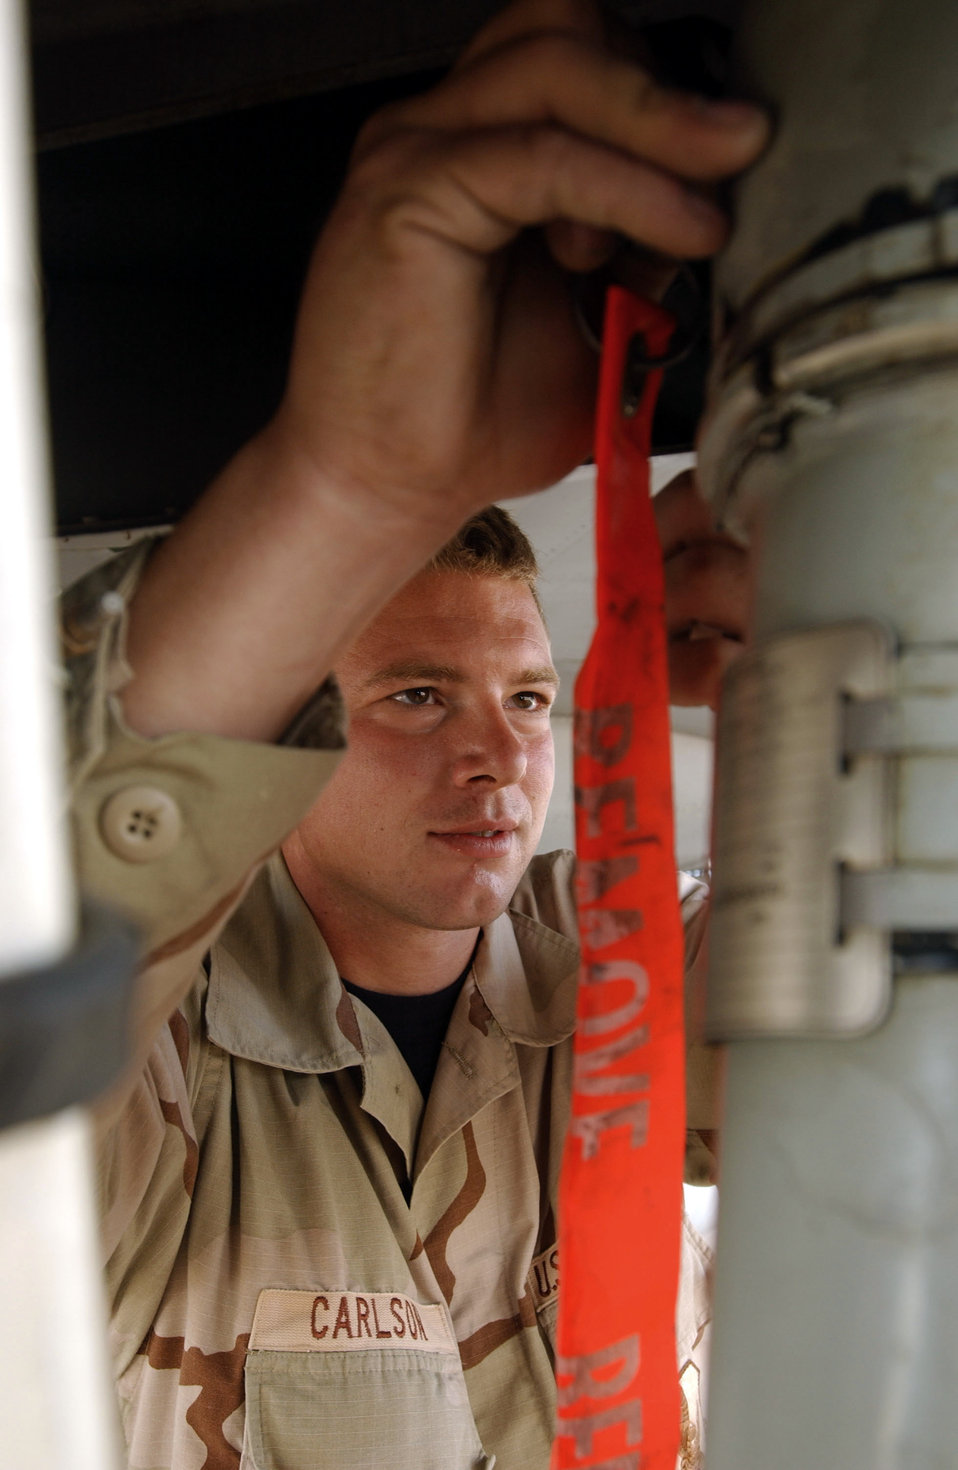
Pulling the pins

TALLIL AIR BASE, Iraq -- Airman 1st Class Michael Carlson removes safety pins from an A-10 Thunderbolt II before it leaves here Dec. 4. The A-10 mission here is complete and the aircraft are returning to their home station.